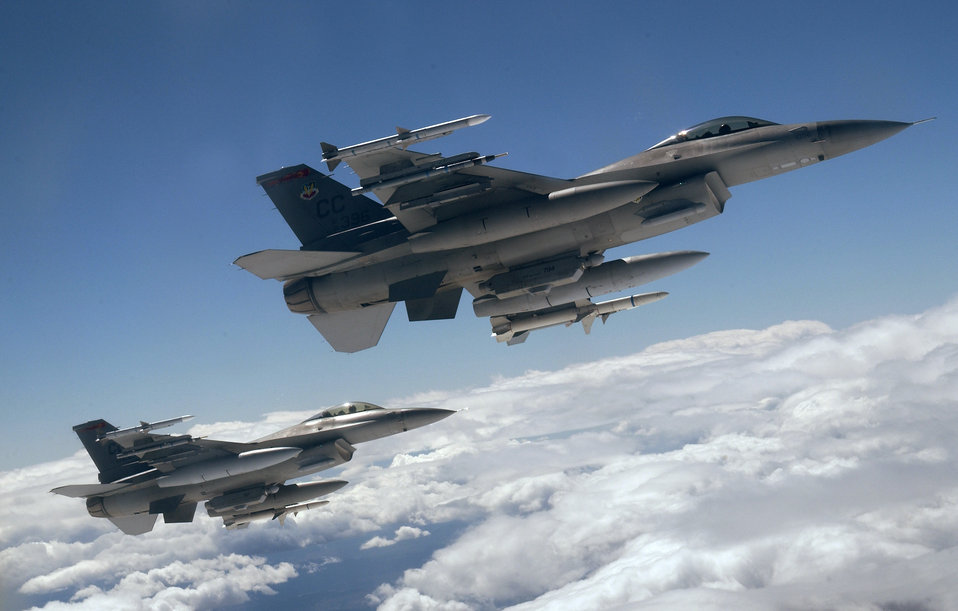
Flying the flag

NELLIS AIR FORCE BASE, Nev. -- A pair of F-16 Fighting Falcons, assigned to the 27th Fighter Wing at Cannon Air Force Base, N.M., head out for a Joint Red Flag mission over the Nevada Test and Training Range near here March 29. The exercise is designed to enhance operational and tactical effectiveness through joint integrated training. This is the first Joint Red Flag involving multinational forces, with more than 10,000 U.S. and foreign coalition forces participating in the training exercise, which runs through April 2.